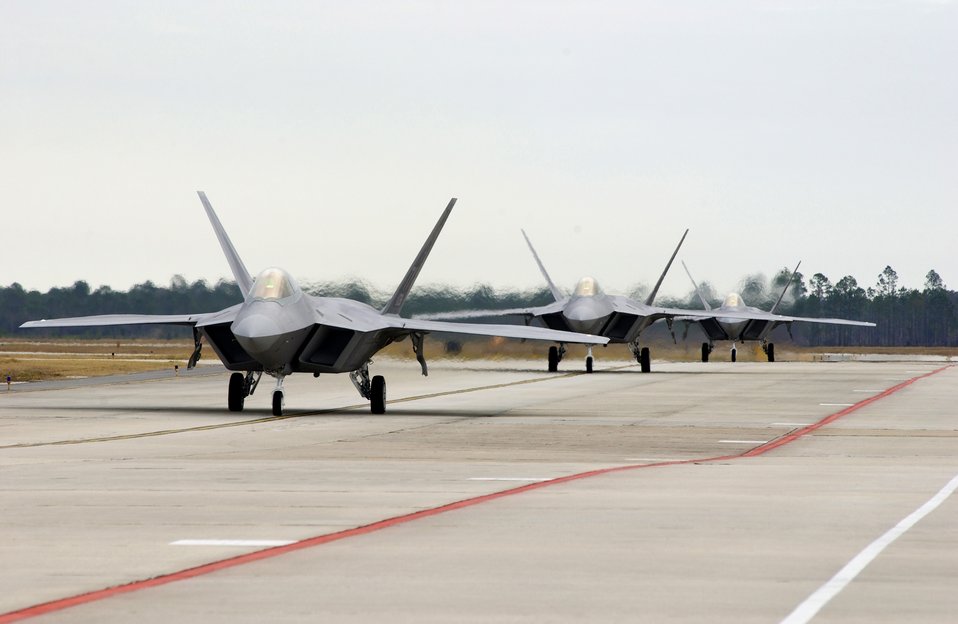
More Raptors have landed

TYNDALL AIR FORCE BASE, Fla. -- Three F/A-22 Raptors taxi on the flightline here Jan. 7 as they arrive at their new home from the production plant in Marietta, Ga. Five new Raptors now call the 43rd Fighter Squadron home, increasing the squadron's inventory to 18 aircraft.